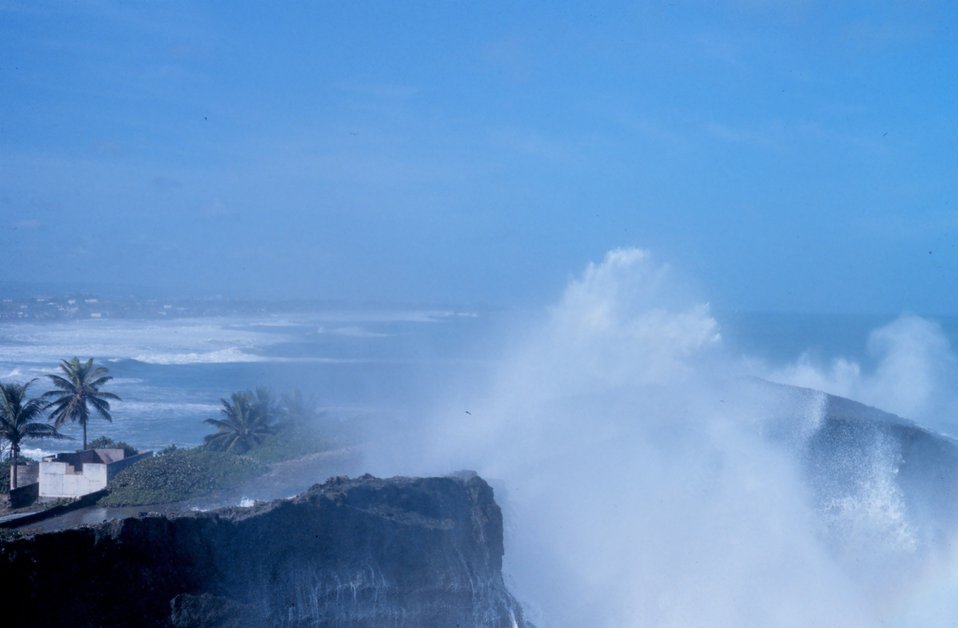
Hurricane surf on the north coast of Puerto Rico. Note building for scale.